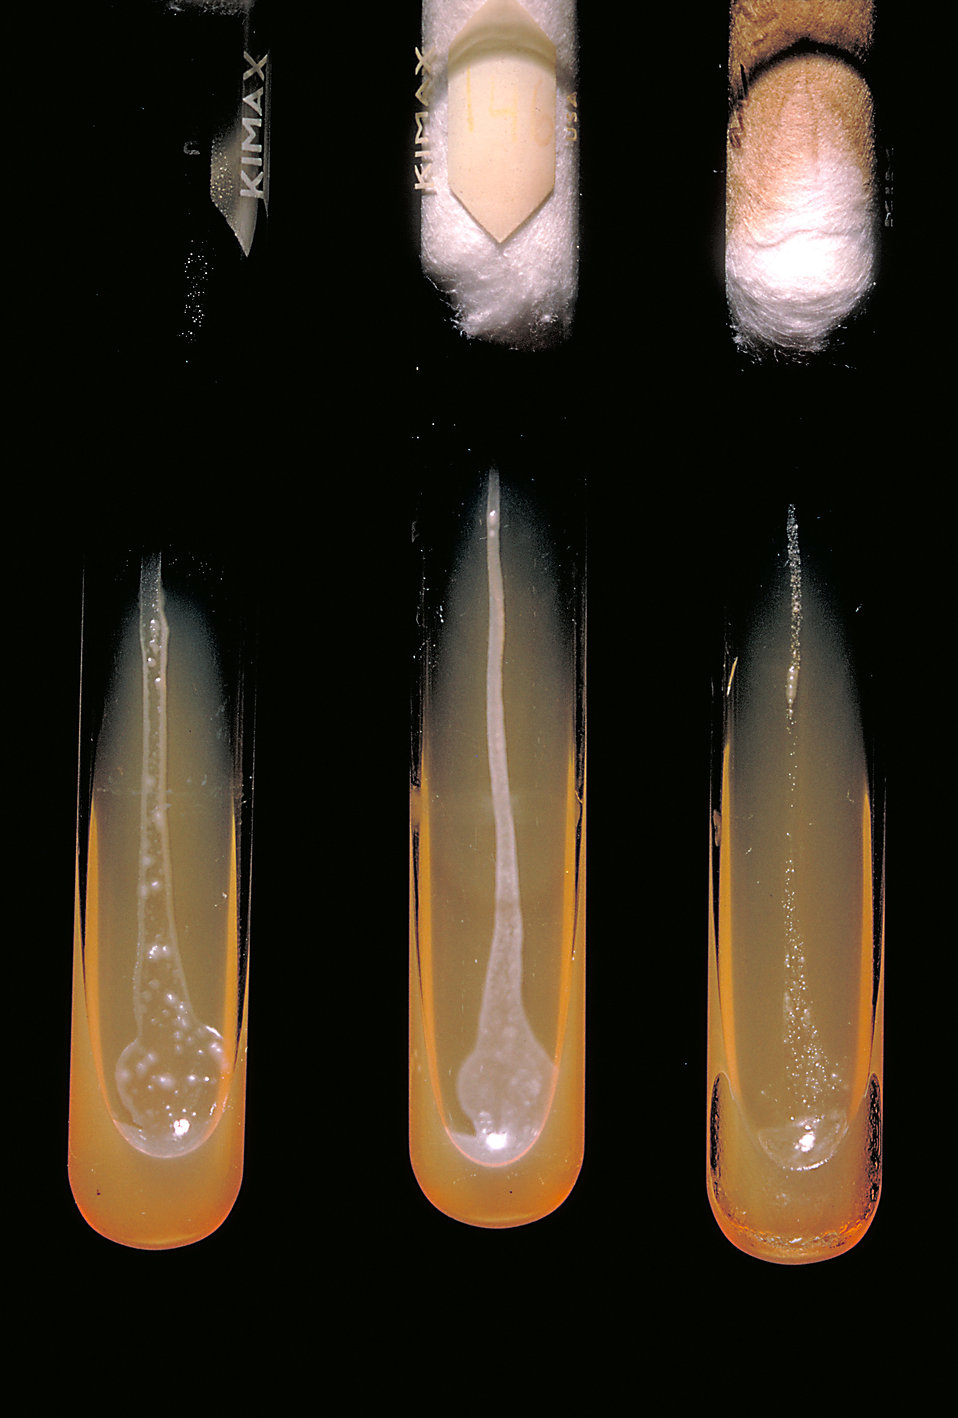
These slant cultures growing Actinomyces viscosus, reveal the oxygen requirements of this bacterium; strain W828.